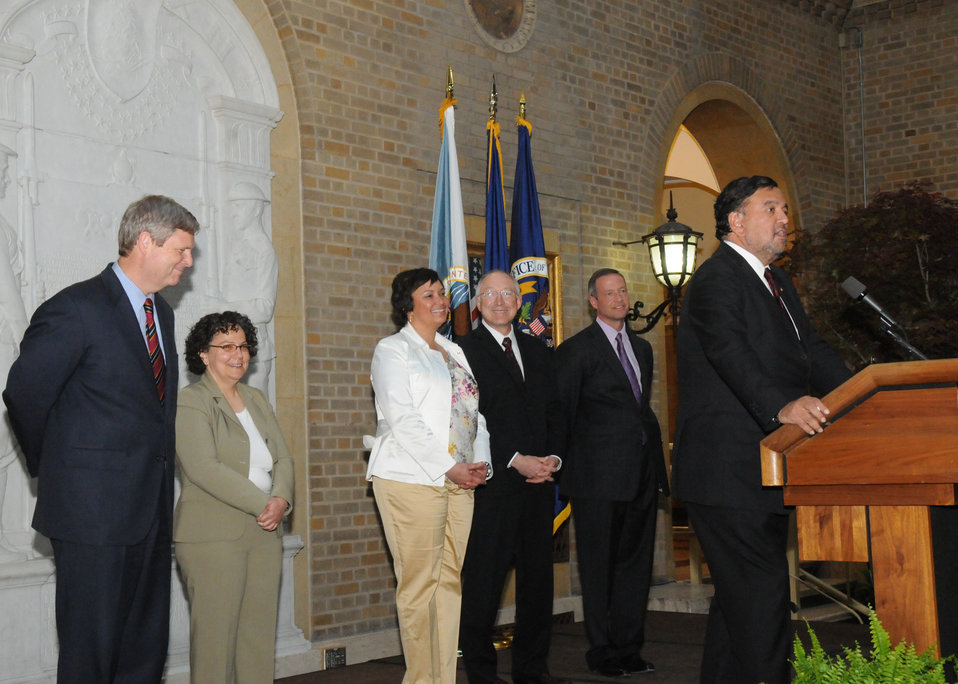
New Mexico Governor Bill Richardson makes remarks at the White House Conference on America’s Great Outdoors reception held at the Department of Agriculture on Thursday, April 15, 2010. (L to R in background Agriculture Secretary Tom Vilsack, Council on Environmental Quality Chair Nancy Sutley, Environmental Protection Agency Lisa Jackson, Interior Secretary Ken Salazar, and Maryland Governor Martin O’Malley ) USDA photo 10di1315-116